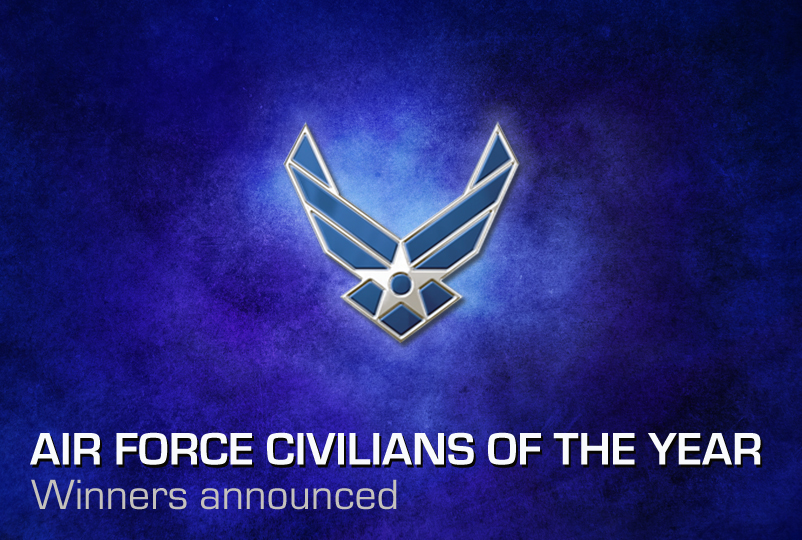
Air Force Civilians of the Year